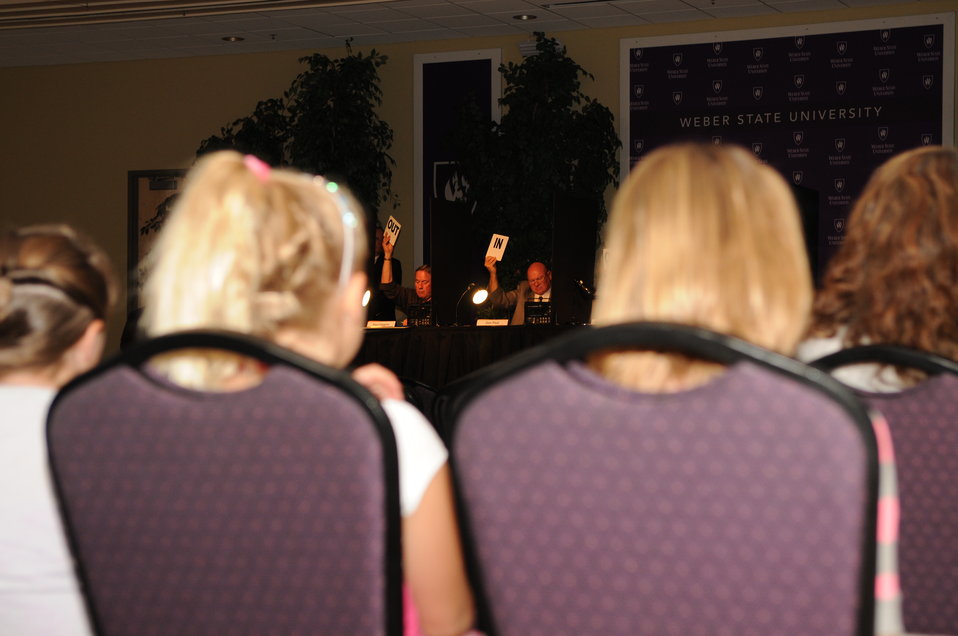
Judging

The U.S. Fish & Wildlife Service sponsored the 2012 Federal Duck Stamp Art Contest September 28 and 29 in Ogden, Utah, at Weber State University. A panel of five judges was responsible for choosing the art work used to design the 2013-2014 Migratory Bird Hunting and Conservation Stamp.